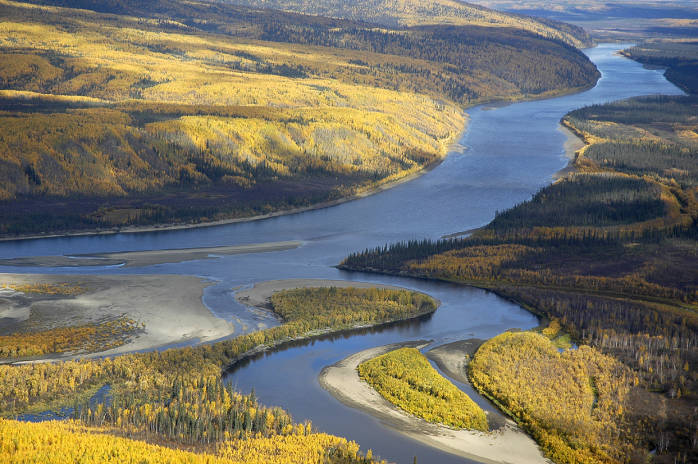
Koyukuk & Kanuti Rivers